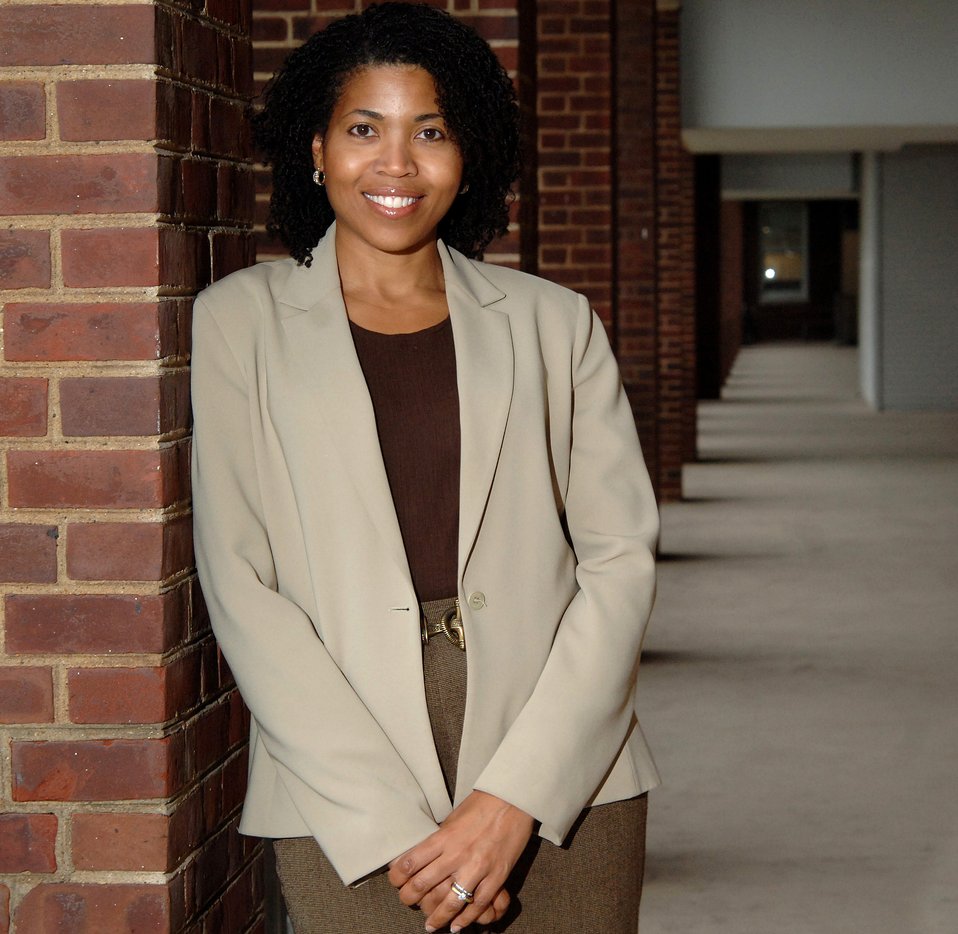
AF Memorial: Serving others is self serving

Audra Griner stands on the balcony outside the wing headquarters building Oct 11 at Bolling Air Force Base, Washington, D.C. Griner is the chief of ceremonial plans for the Air Force Distict of Washington and will be involved in the Air Force Memorial dedication ceremonies Oct. 14.